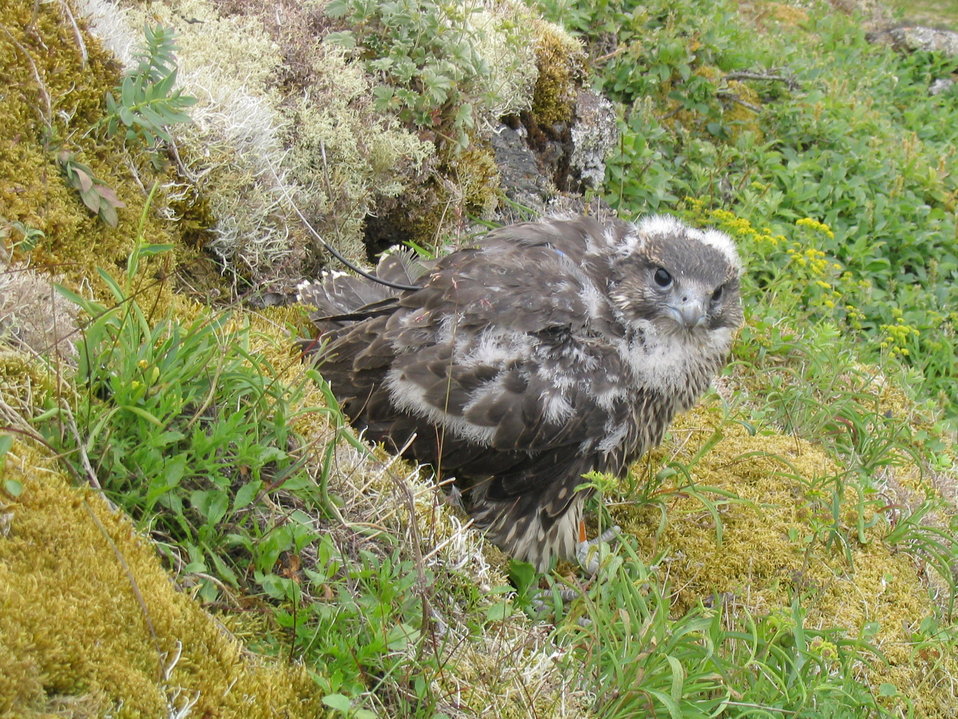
Gyrfalcon fledgling with harness transmitter

In 2004 a multi-year research project was initiated investigating Gyrfalcons within the YDNWR.

USFWS Yukon Delta NWR